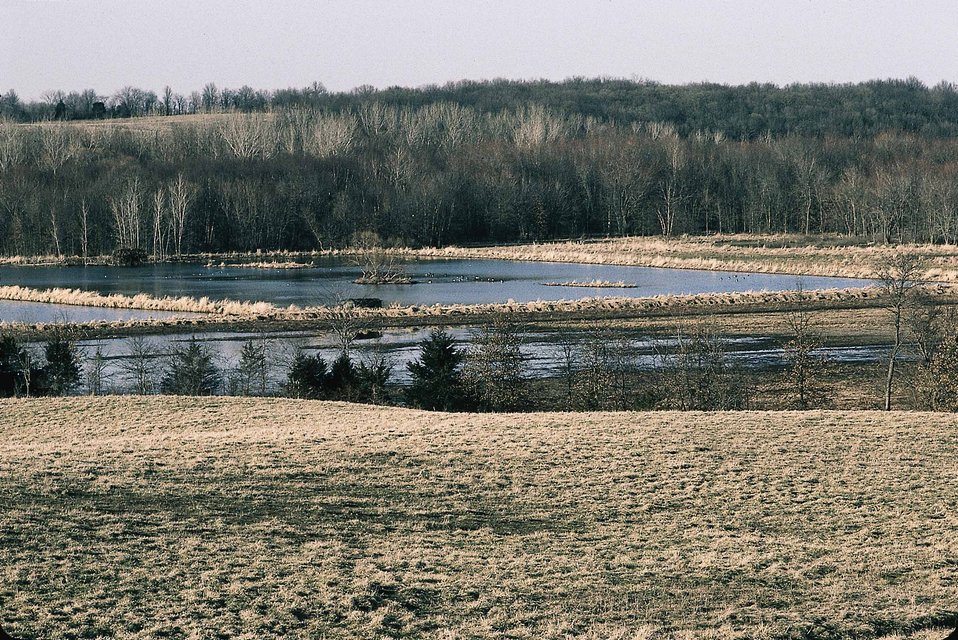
Habitat for ducks and geese on a restored wetland in Van Buren County, Iowa.